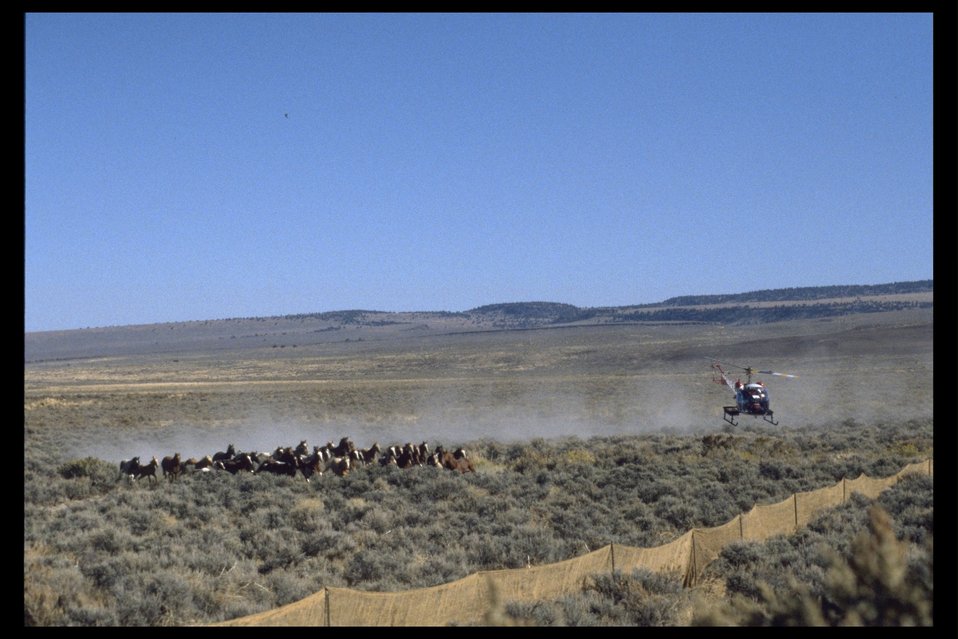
Helicopter driving South Steens wild horses into a trap.